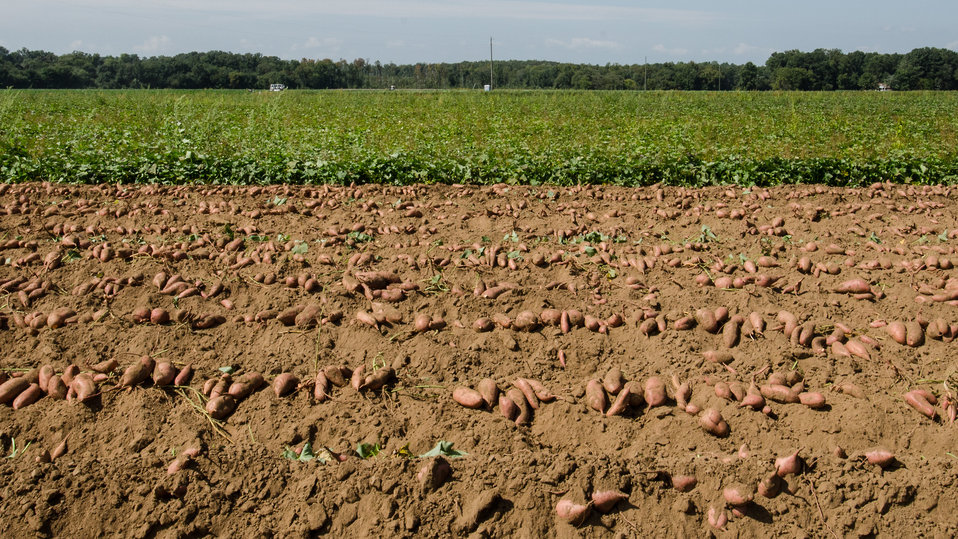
The sweet potatoes harvest begins by plowing them up at Kirby Farms in Mechanicsville, VA on Sept. 20, 2013. They devote 200 acres of the farm to eggplant, spinach, beets, tomato, jalapeno peppers, melons and a variety of greens. Soybeans and small grain are grown on the remaining 300 acres. The fertile Virginia soil and their management practices, allows Kirby Farms to double and triple crop fields with rotational crop selection. Wholesalers, who buy from this farm, sell the produce to major supermarkets in the Mid-Atlantic region, from North Carolina to Maryland. Restaurateurs in the local area prepare and serve their harvest to patrons in the Greater Richmond Region.